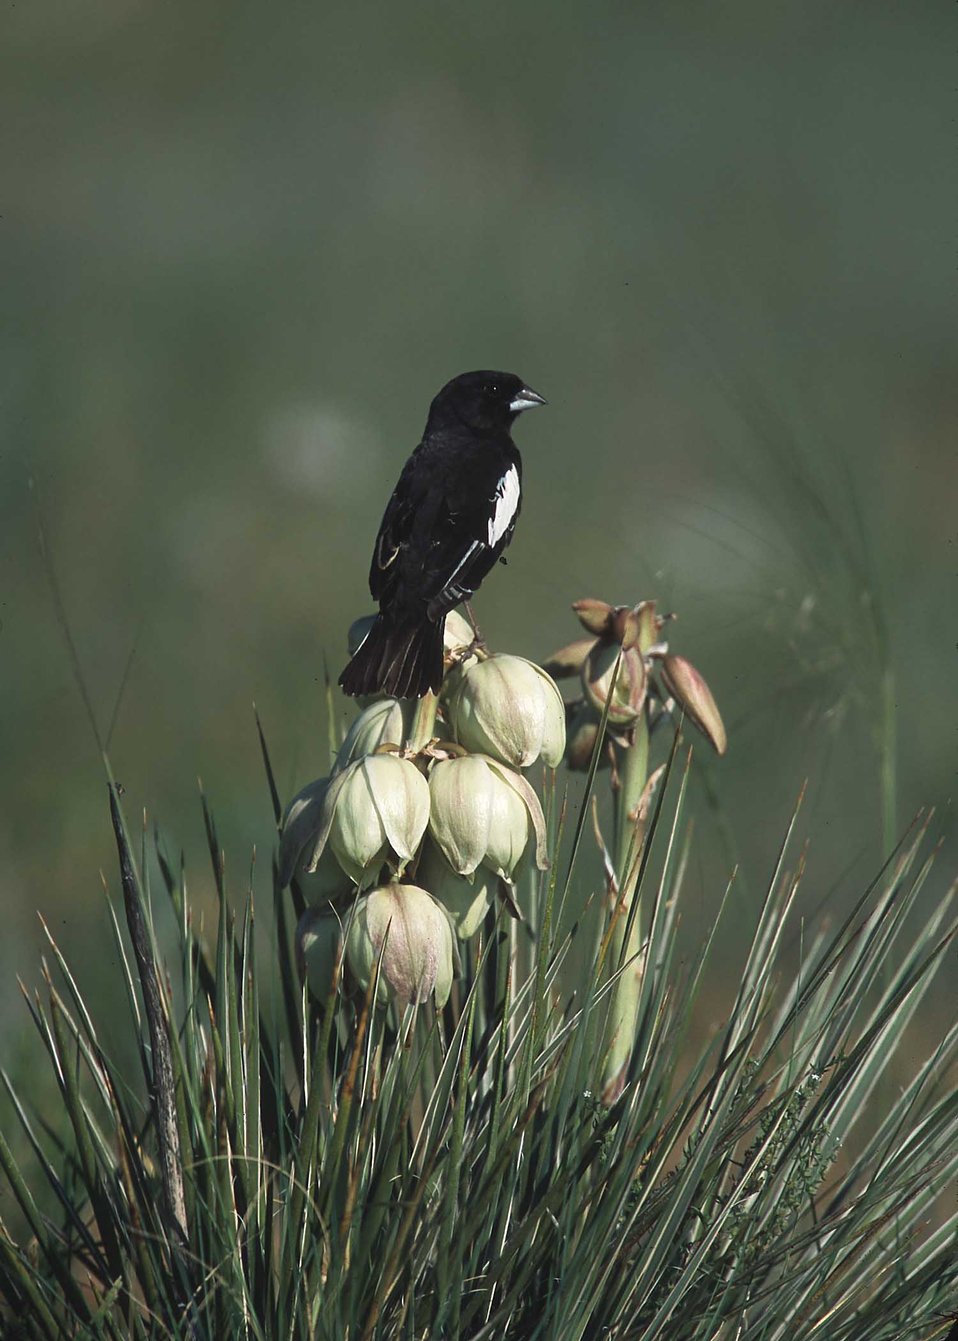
Lark Bunting on Spanish Bayonette (Cholla).